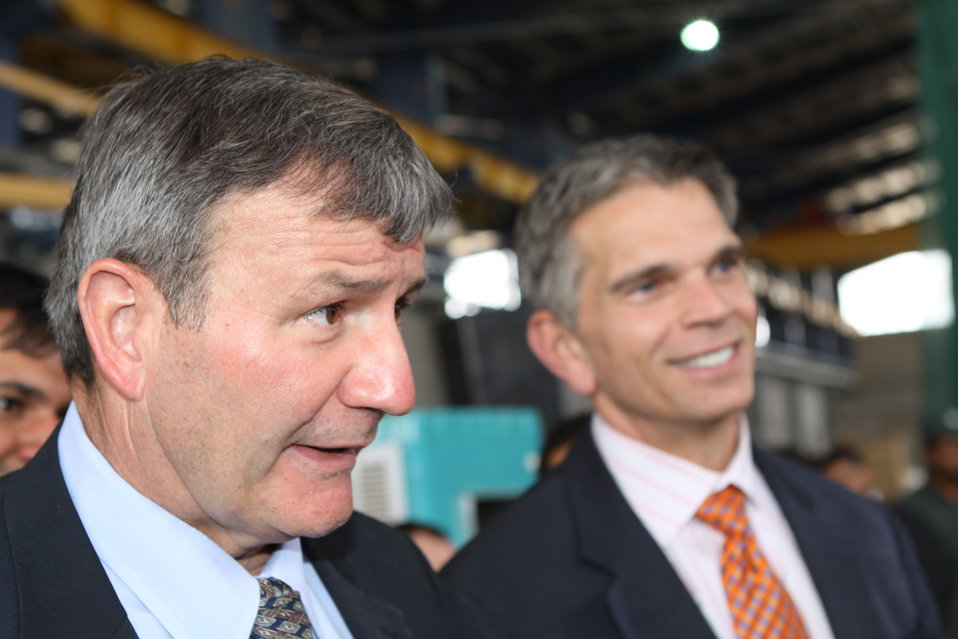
100525 Hirat Marble Conference 463